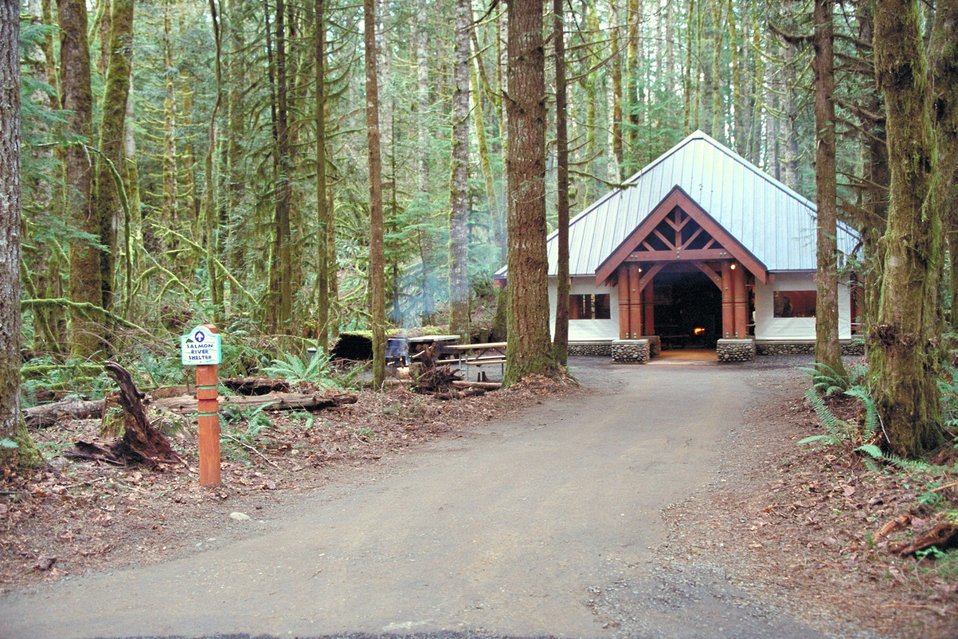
Cascade Stream Watch is an environmental education program conducted at BLM's Wildwood Recreation site.